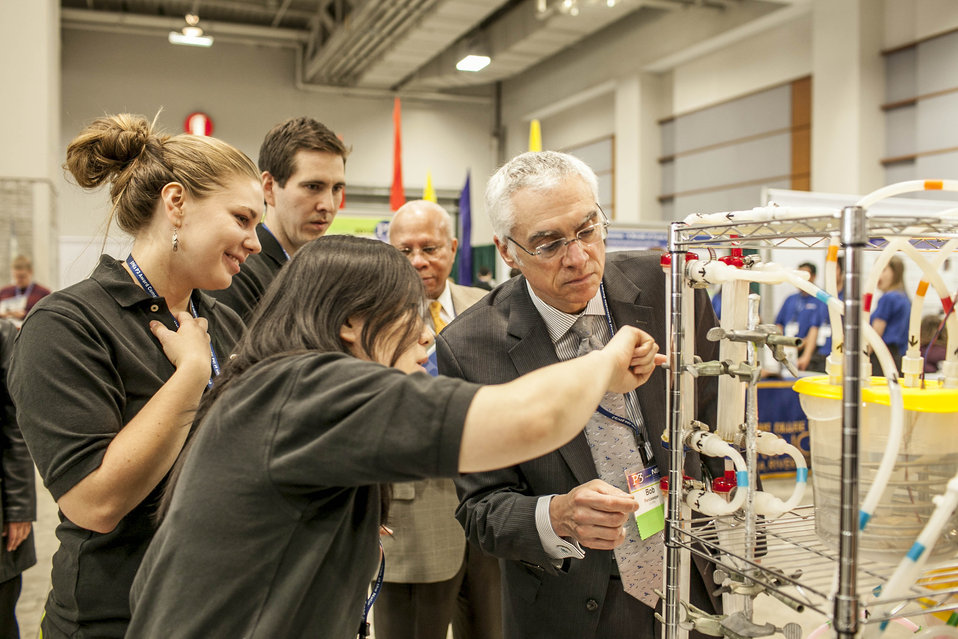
2014 P3 Competition

University of Maryland’s team demonstrates the their novel solar water treatment system to EPA Deputy Administrator, Bob Perciasepe.
University of Maryland’s EPA P3 website